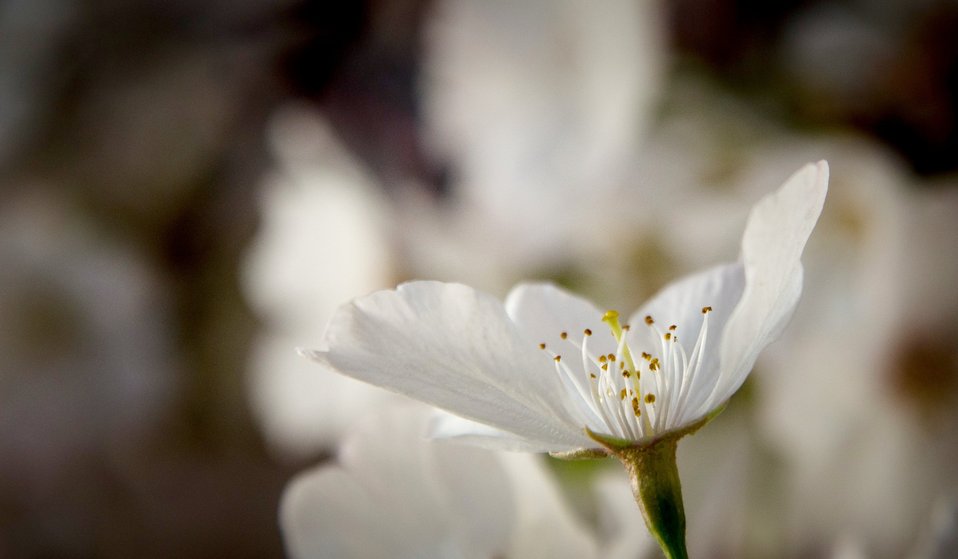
Cherry blossoms at the Tidal Basin in Washington, D.C., on Tuesday, March 20, 2012.